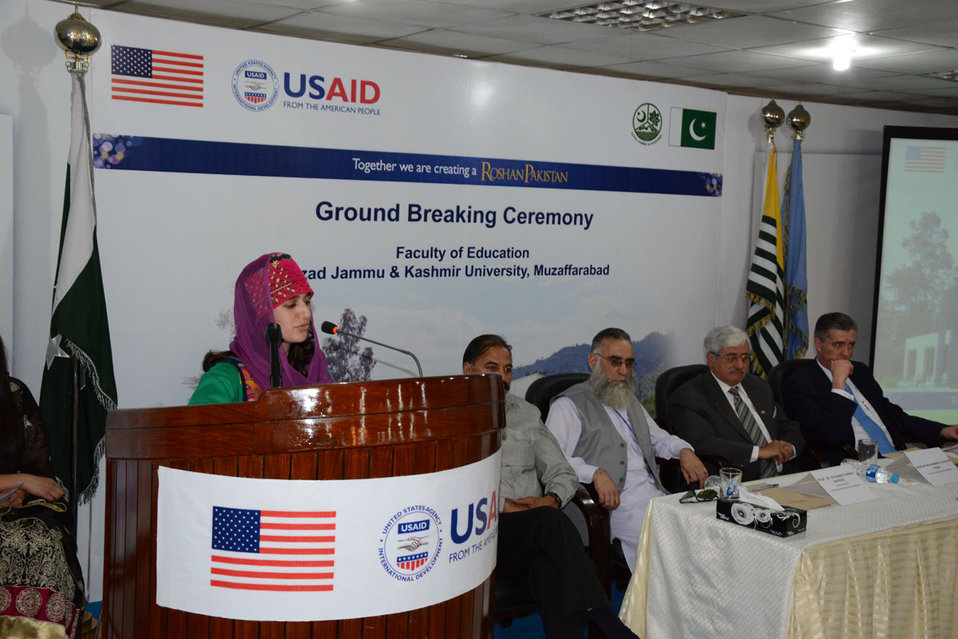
The United States Ambassador to Pakistan, Richard Olson broke ground for a U.S. funded construction of a new Faculty of Education building in Muzaffarabad, AJK. 23